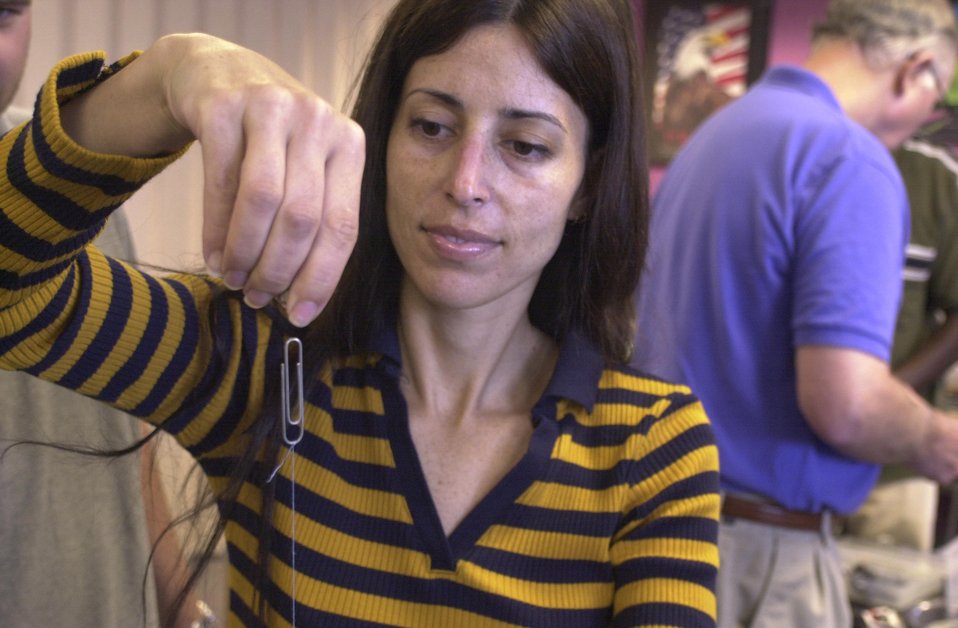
MIDDLE SCHOOL SCIENCE TEACHER PARTICIPATING IN A MAGNETISM EXPERIMENT AT THE THOMAS JEFFERSON NATIONAL ACCELERATOR FACILITY.

IN JULY, 2003 THOMAS JEFFERSON NATIONAL ACCELERATOR FACILITY HELD ITS FOURTH ANNUAL P.E.S.T. (PHYSICS ENRICHMENT FOR SCIENCE TEACHERS) PROGRAM. THE PROGRAM, ATTENDED BY MIDDLE SCHOOL TEACHERS THROUGHOUT THE U.S., IS DESIGNED TO FURTHER THE KNOWLEDGE OF SCIENCE TEACHERS BY PROVIDING THEM WITH A MINI COURSE IN BASIC PHYSICS.